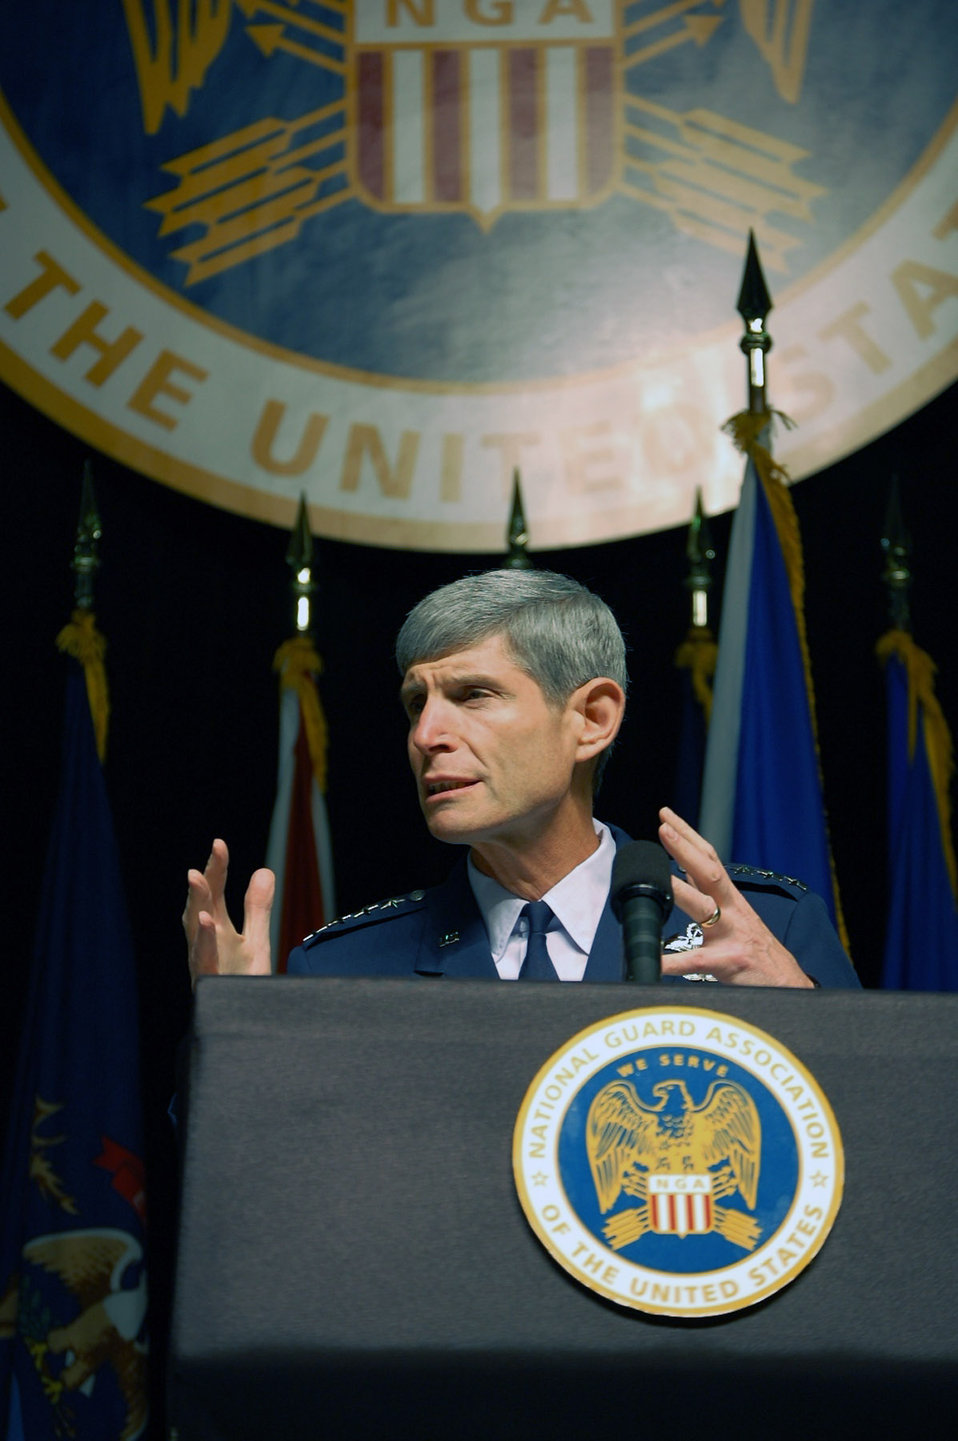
Gen. Schwartz outlines future role, relationship with Guard

Air Force Chief of Staff Gen. Norton A. Schwartz speaks during a conference of the National Guard Association of the United States Sept. 22 in Baltimore.